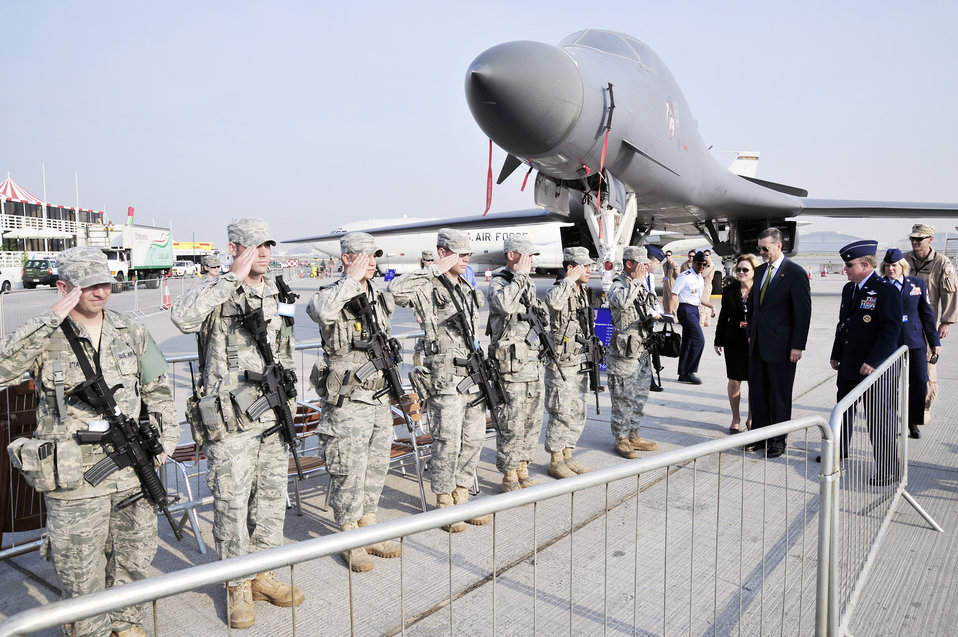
Dubai Air Show

Deborah Jones, the U.S. Ambassador to Kuwait, Richard Olsen, the U.S. Ambassador to the United Arab Emirates and Brig. Gen. Bryan Benson, the 380th Air Expeditionary Wing commander, exit the Department of Defense static displays Nov. 15, 2009 at the Dubai Air Show in the United Arab Emirates.